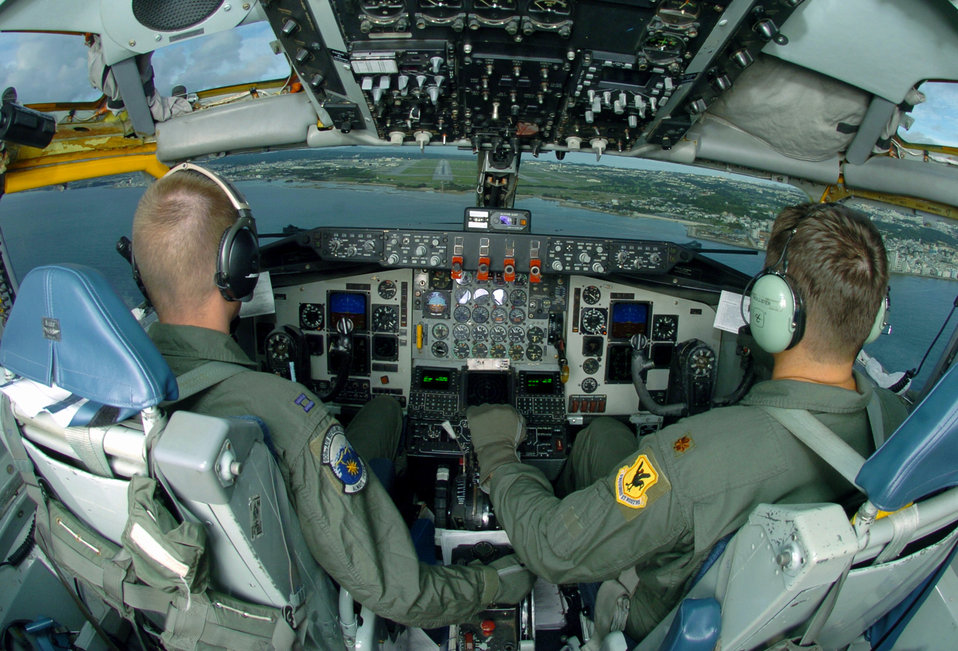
Got gas?

KADENA AIR BASE, Japan -- Capt. Troy Wing (left) and Maj. Scott Holliste prepare to land their aircraft here after a refueling mission. They are KC-135 Stratotanker pilots from the 909th Air Refueling Squadron. The squadron's aircrews support peacetime operations and all levels of conflict in the Pacific theater.